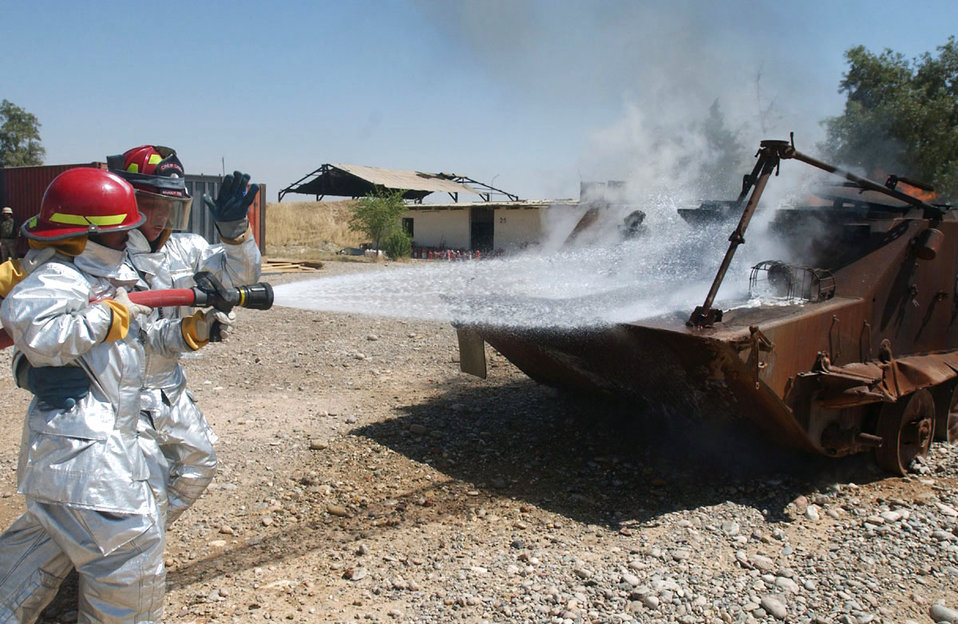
Kirkuk firefighters train Iraqi guards

KIRKUK AIR BASE, Iraq -- Staff Sgt. Shannon Anderson shows an Iraqi firefighter how to attack a fire during a joint training session here. Sergeant Anderson is assigned to the 506th Expeditionary Civil Engineer Squadron's fire department and is from Moody Air Force Base, Ga.